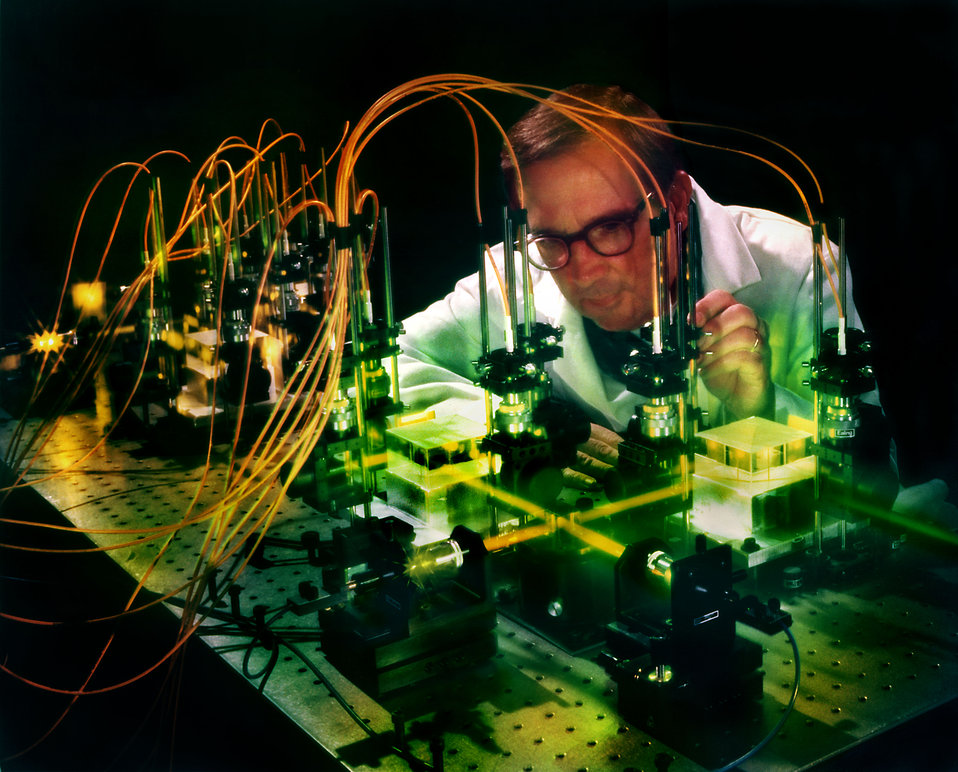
Lasers Oak Ridge

85-732 DOE photo by Frank Hoffman
Lasers
K-25 Oak Ridge Tennessee 12-5-1985